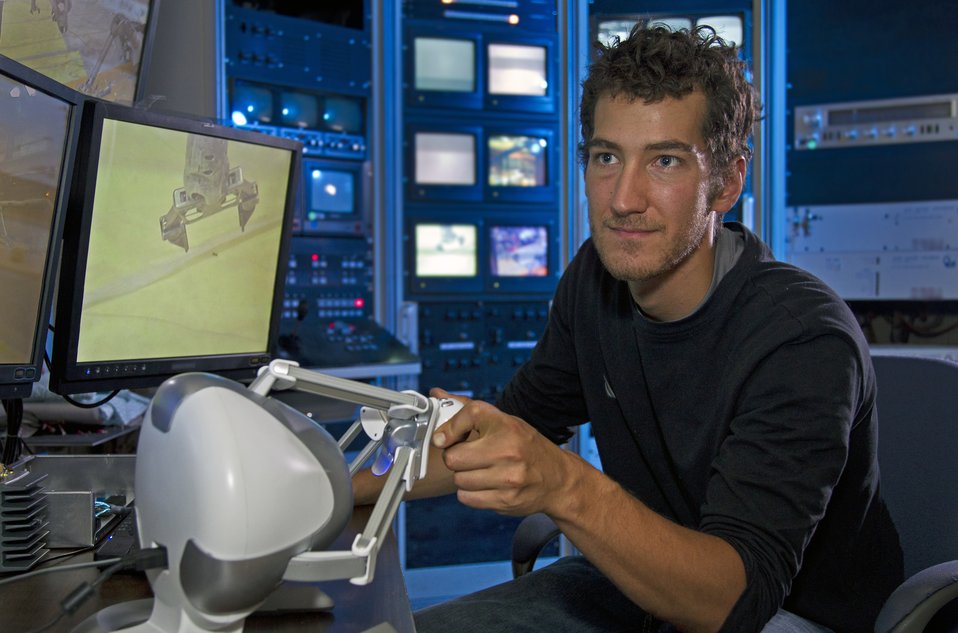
LOS ALAMOS NATIONAL LABORATORY GRADUATE STUDENT USES A 30 HAPTIC CONTROLLER,USED FOR VIDEO GAMES, TO OPERATE A ROBOT ARM FOR HANDLING RADIOACTIVE MATERIAL AT THE LOS ALAMOS NEUTRON SCIENCE CENTER.